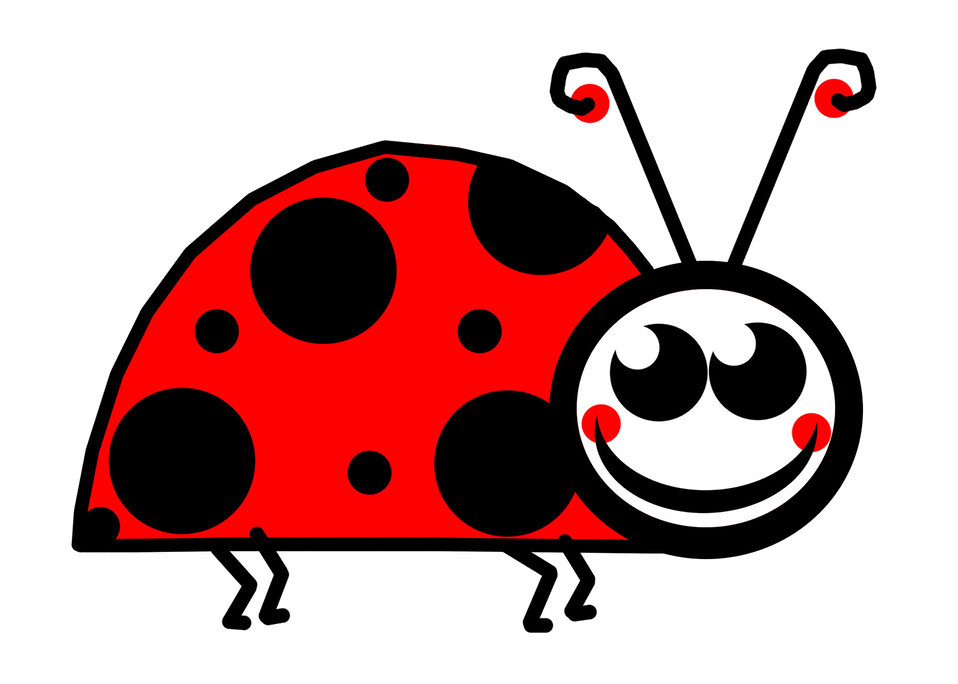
Lady bug clip art.